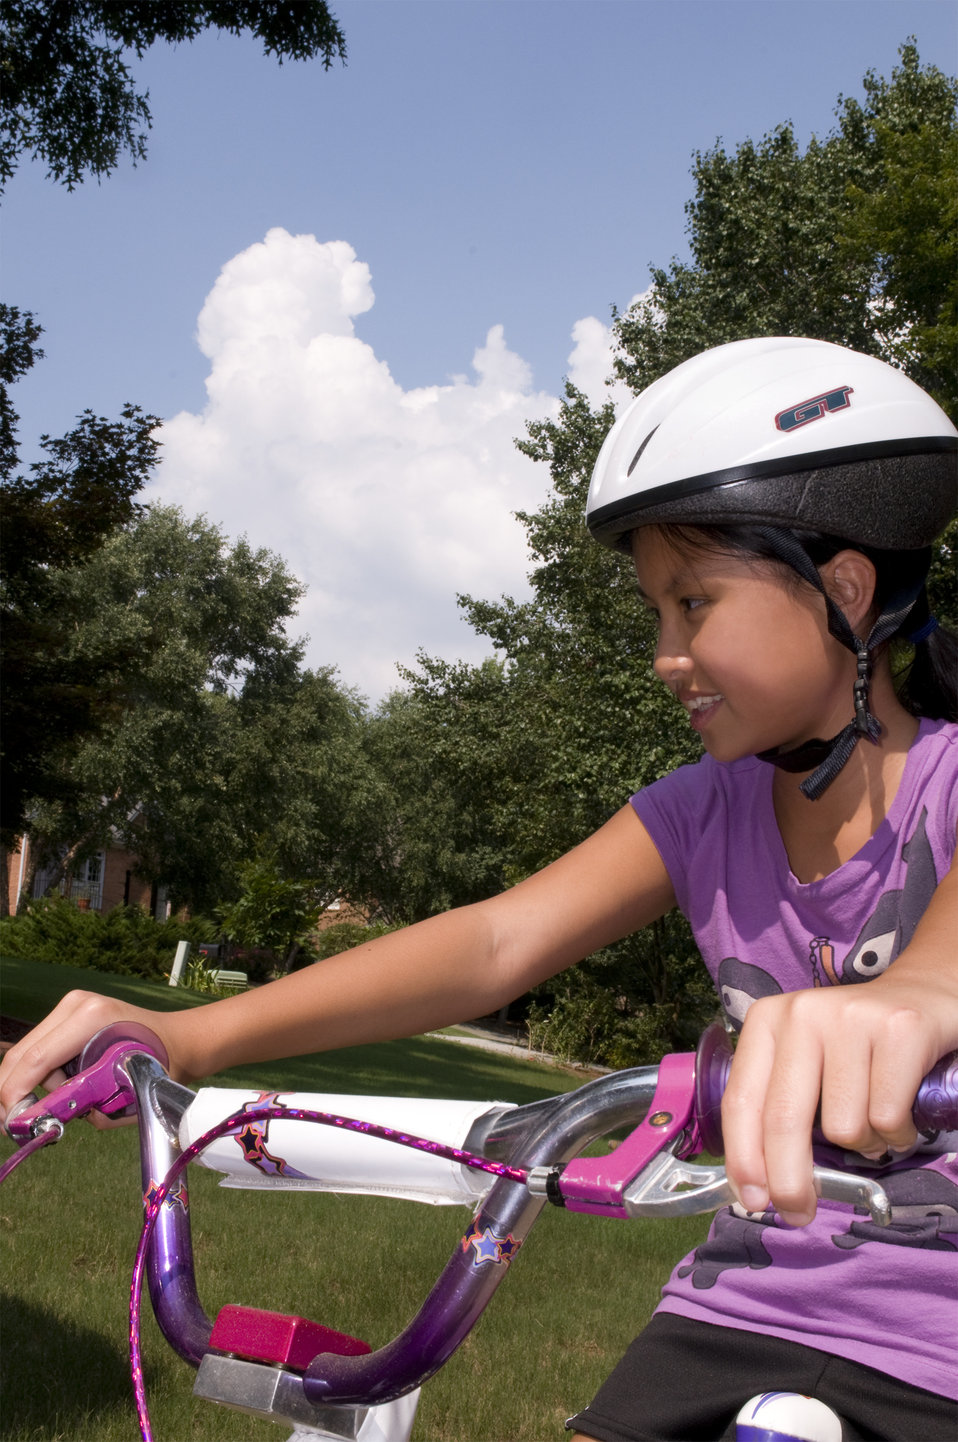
The young girl pictured here, was out for a day of fun on a beautiful sunny Georgian day on her bicycle. She'd been equipped with a protective helmet, and hopefully, had applied sunscreen to her sun-exposed skin, which would protect her from the harmful ultraviolet rays of the sun. Also note the protective padding that wrapped the handle bar support brace, which would protect her head in case she was involved in a fall.